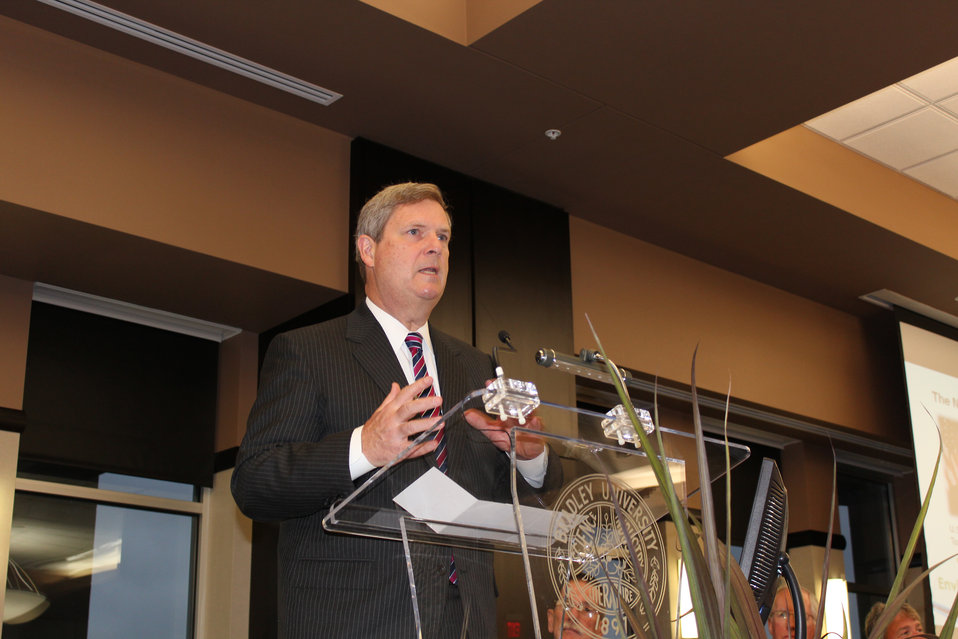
Agriculture Secretary Tom Vilsack keynote speaker at the “Future of Midwest Agriculture and Environmental Sustainability symposium at Bradley University in Peoria, IL, on Thursday, Nov. 3, 2011.